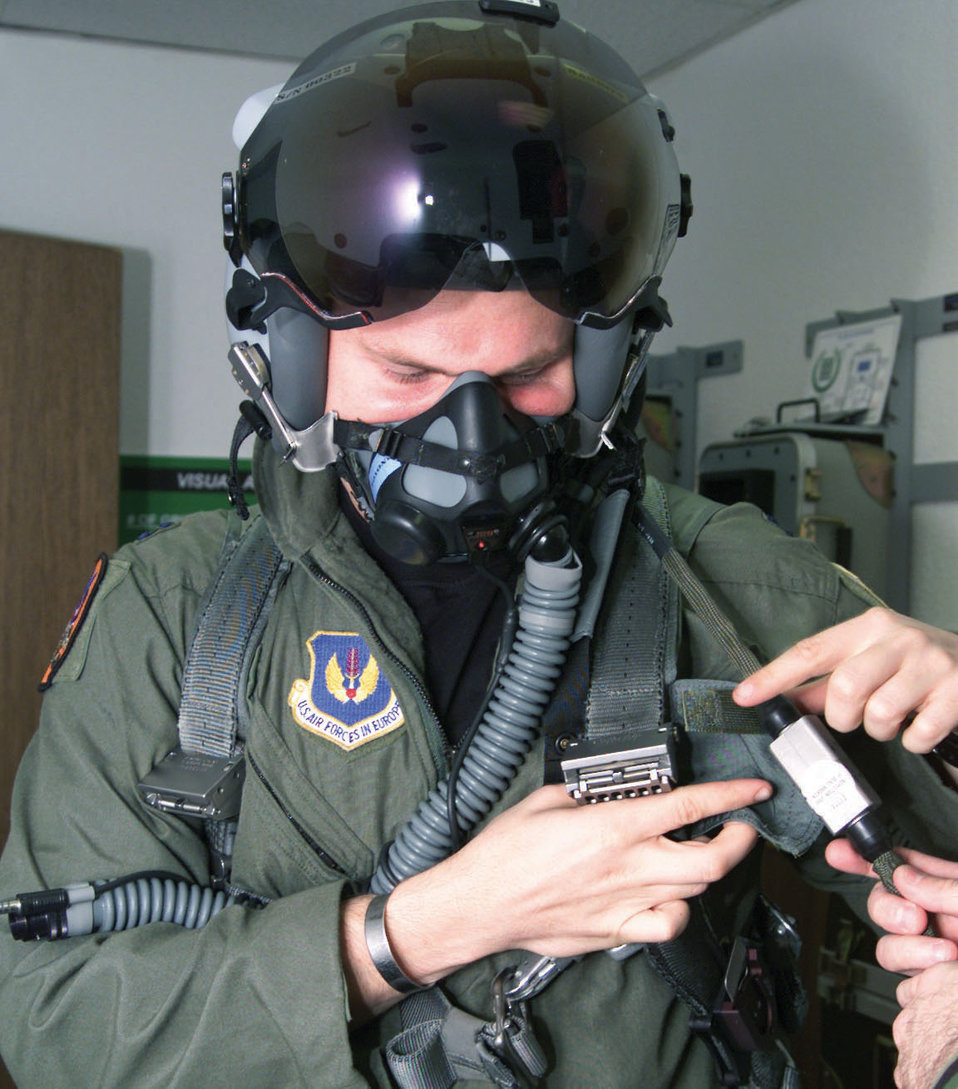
Helmet upgrades enhance air power

SPANGDAHLEM AIR BASE, Germany -- Capt. Kevin Lord demonstrates the Joint Helmet-Mounted Cueing System that is now used in 52nd Fighter Wing's F-16 Fighting Falcons here. The new system puts critical data less than three inches from a pilot's right eye. Captain Lord is an F-16 pilot with the 23rd Fighter Squadron.